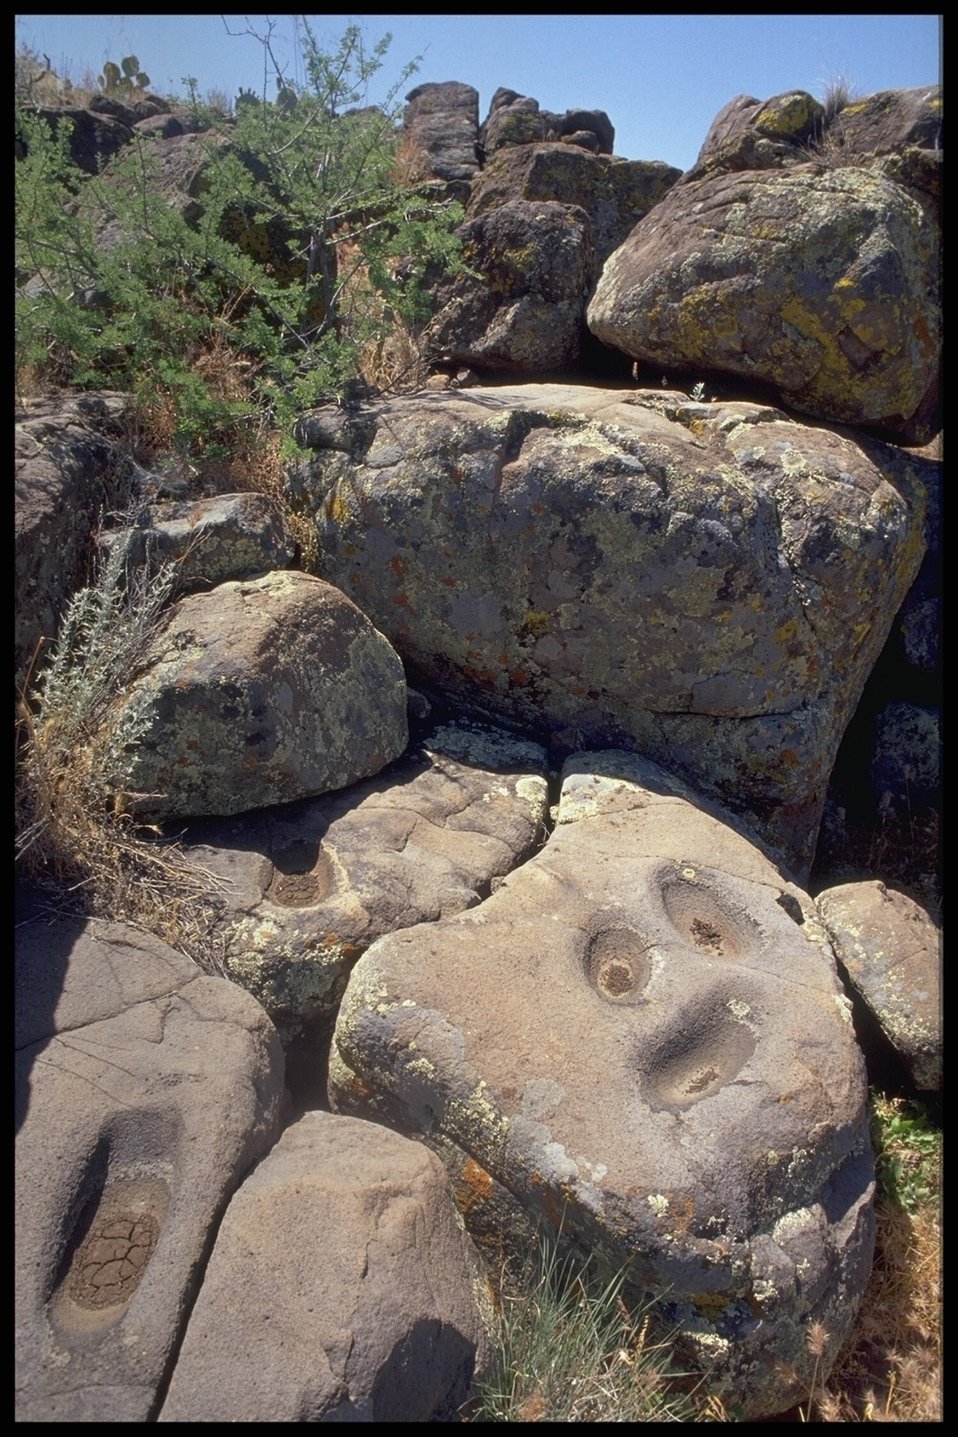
Big Rocks in the Agua Fria National Monument.